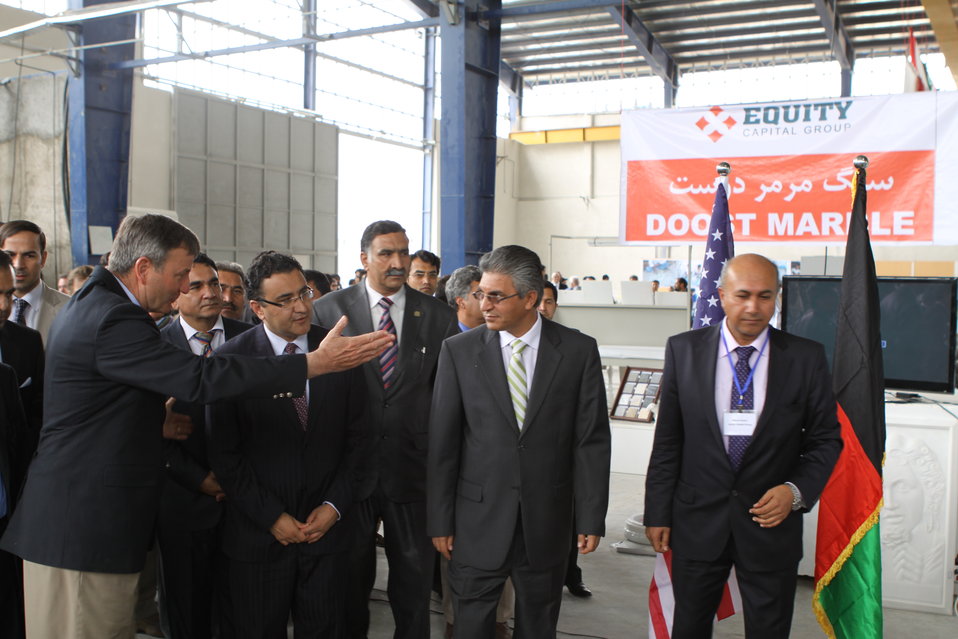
100525 Hirat Marble Conference 099